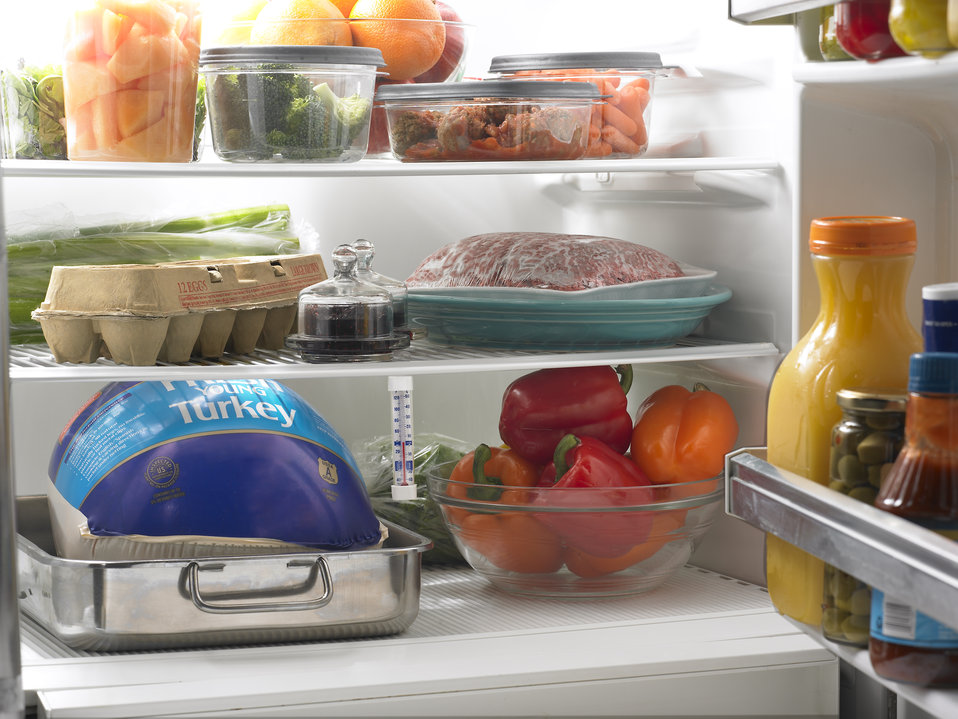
Never thaw foods in a garage, basement, car, dishwasher or plastic garbage bag; out on the kitchen counter, outdoors or on the porch. These methods can leave your foods unsafe to eat. There are three safe ways to thaw food: in the refrigerator, in cold water, or in the microwave. It's best to plan ahead for slow, safe thawing in the refrigerator. Small items may defrost overnight; most foods require a day or two and large items like turkeys may take longer, approximately one day for each 5 pounds of weight.